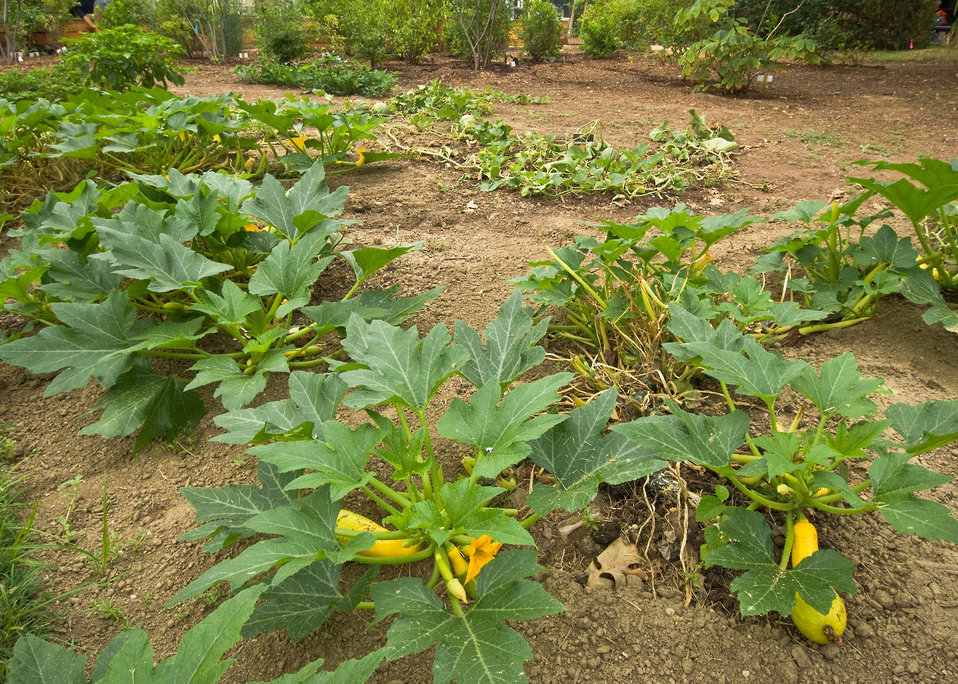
Summer squash ready to be harvested from The People's Garden at the U.S. Department of Agriculture. USDA Photo 09di1541-10